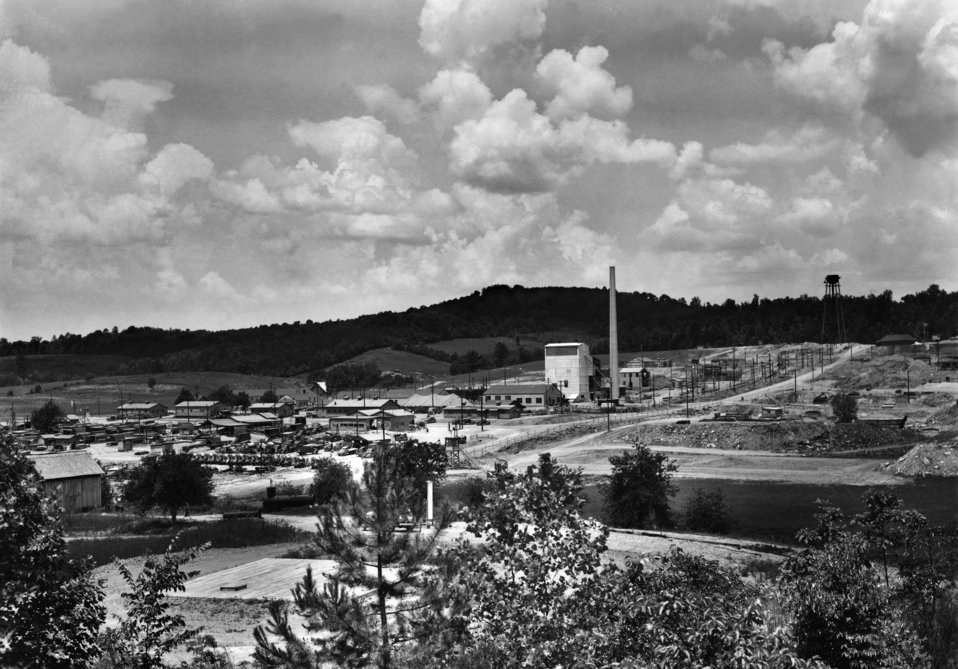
Clinton Engineer Works ORNL Oak Ridge 1943

X-10-46 DOE photo Ed Westcott 6-27-1943 Panorama of TNX Area from Hill back of Disposal Plant Oak Ridge Tennessee